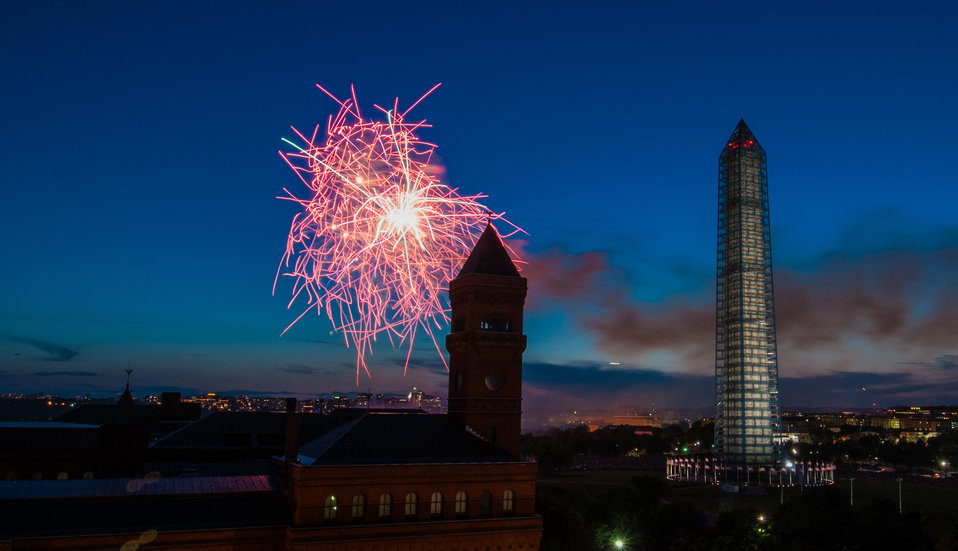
4th of July fireworks as seen from the U.S. Department of Agriculture (USDA) headquarters building, with the USDA Forest Service Yates Building in the foreground, left, and the Washington Monument in Washington, D.C., on July 4, 2013.